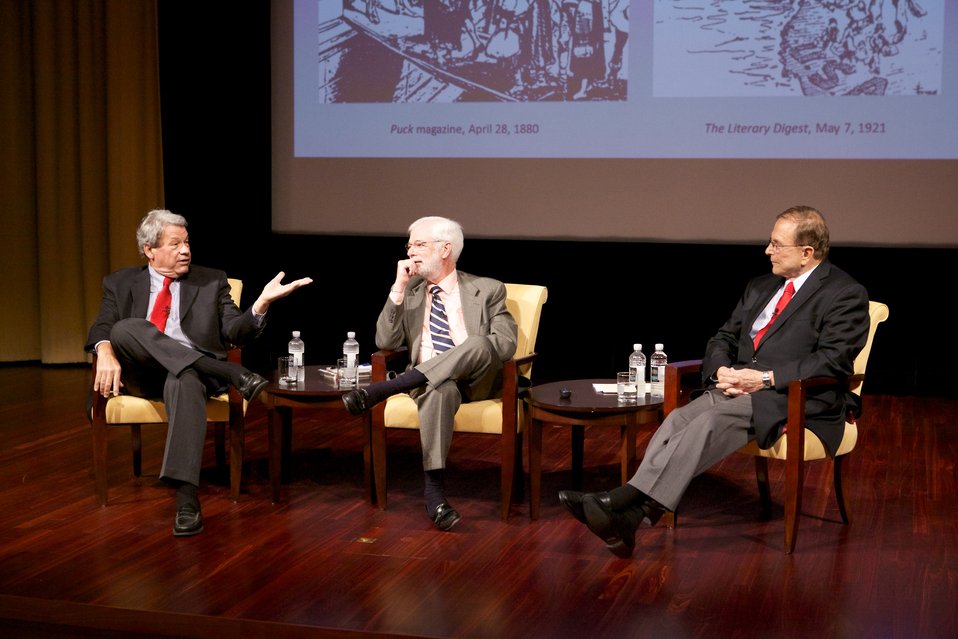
A Nation of Immigrants: How They Shaped America